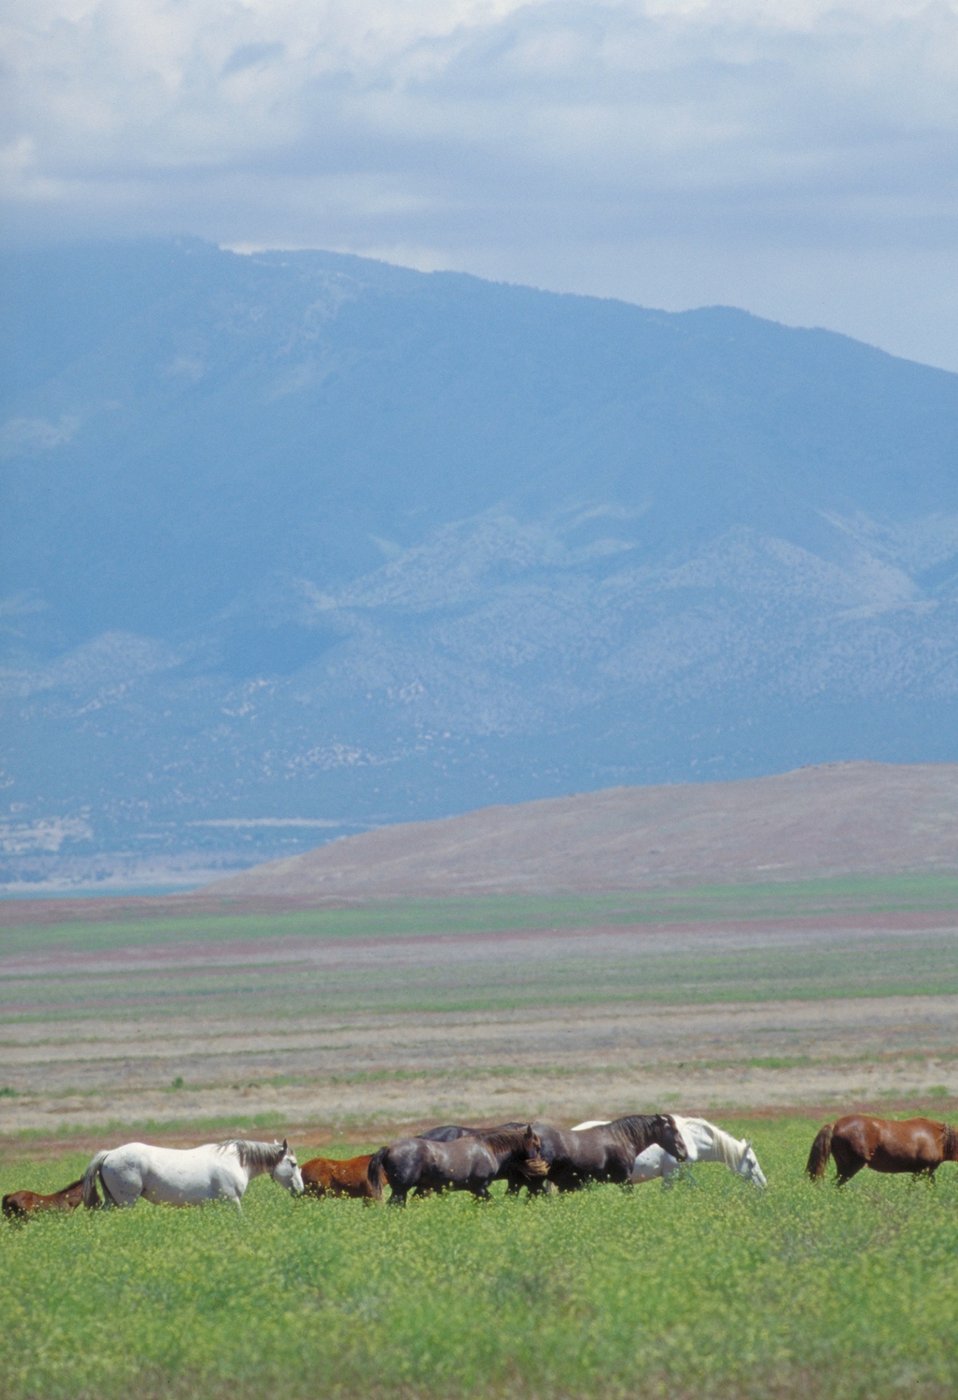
Onaqui Herd near Dugway, Utah.